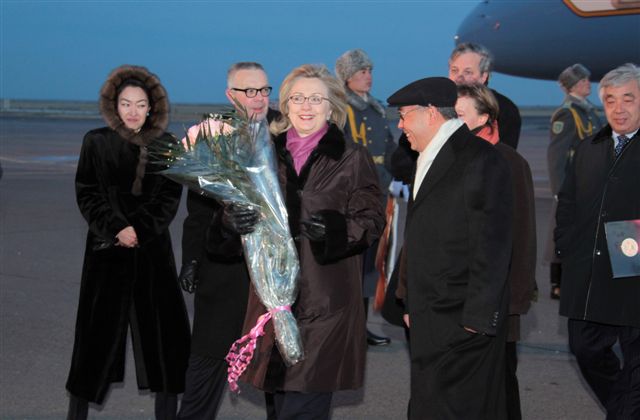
Secretary Clinton Is Greeted Upon Landing

U.S. Secretary of State Hillary Rodham Clinton is greeted upon landing in Astana, Kazakhstan, on November 30, 2010.